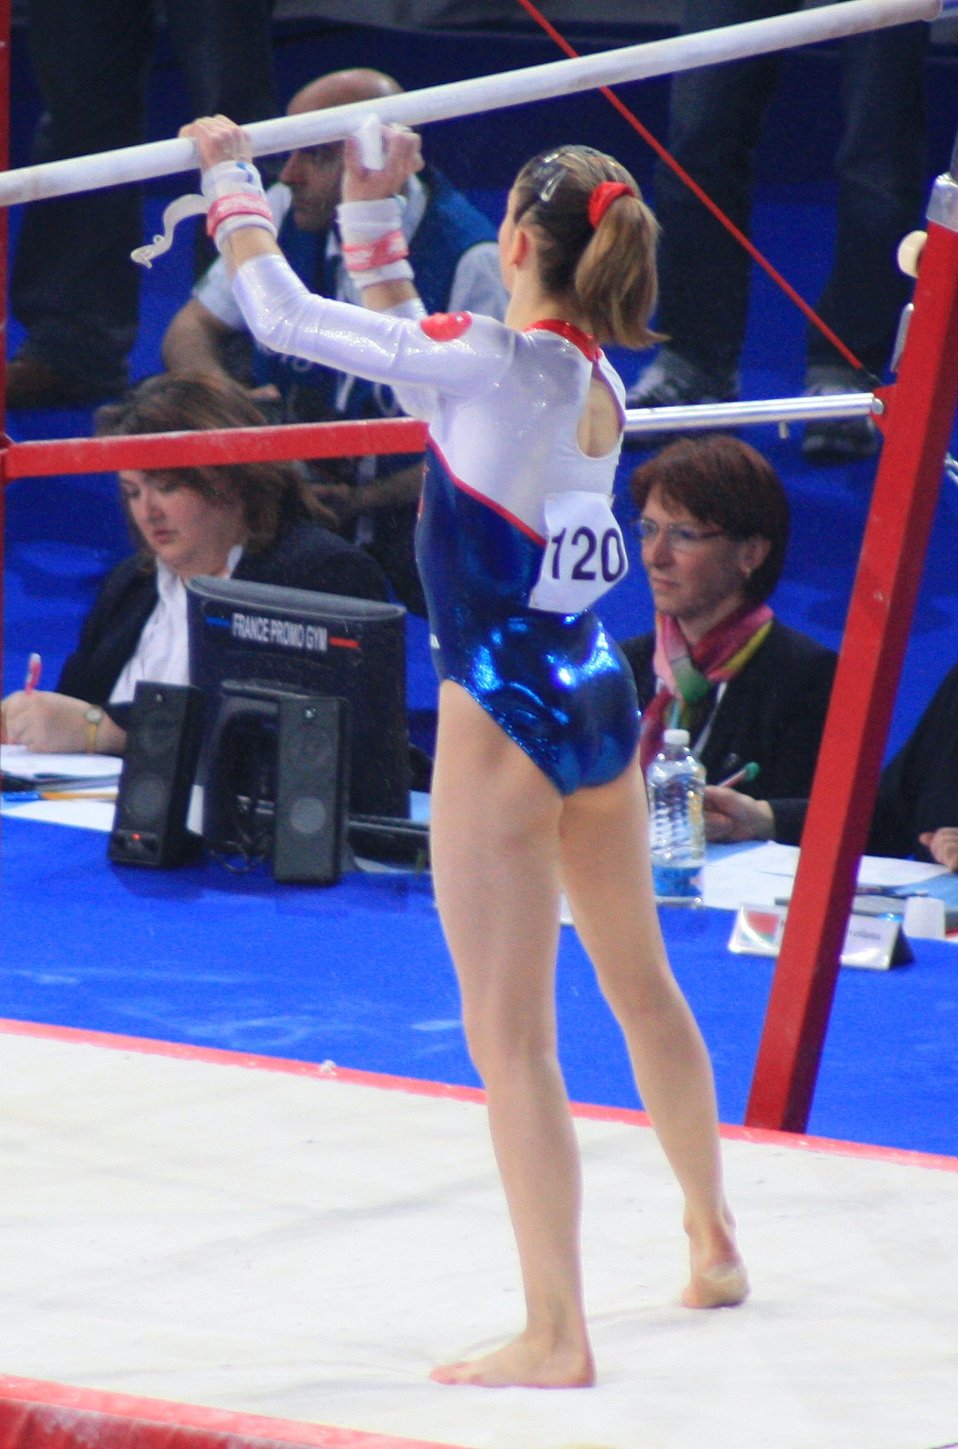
Fran√ßais†: Youna Dufournet pr√©parant sa barre avec de la magn√©sie, en qualifications des 17e Internationaux de France en 2010.